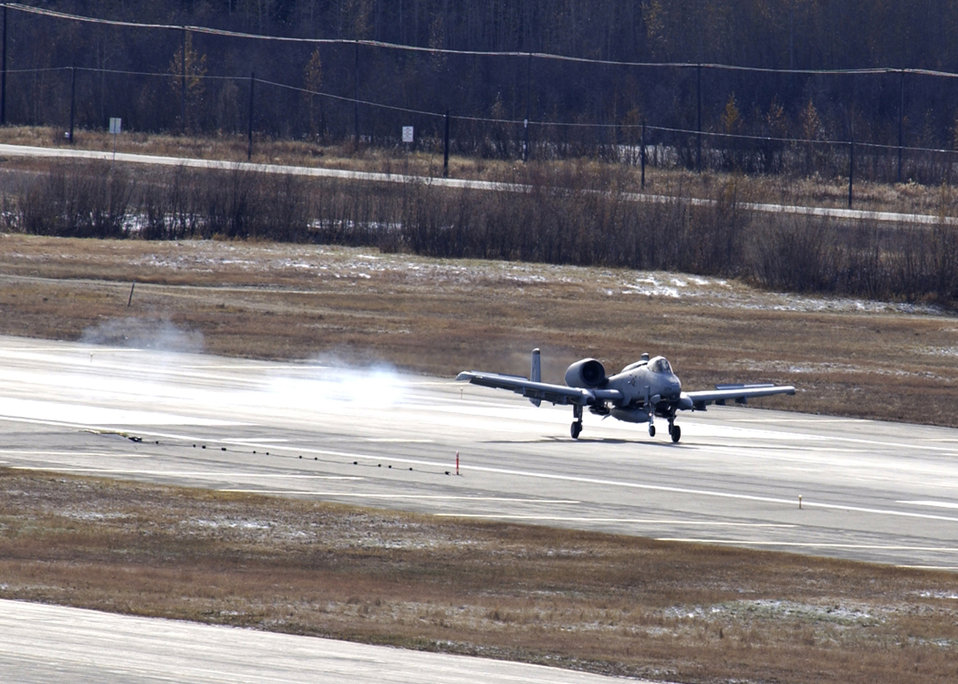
Home at last

EIELSON AIR FORCE BASE, Alaska -- The first O/A-10 Thunderbolt ll from the 355th Fighter Squadron lands here for the first time in six months on Sept. 29. The A-10's are returning after a six-month deployment to Bagram Air Base, Afghanistan. The 355th Fighter Squadron's primary missions now include air strike control, close air support, target interdiction, joint air attack team, combat escort, and combat search and rescue.